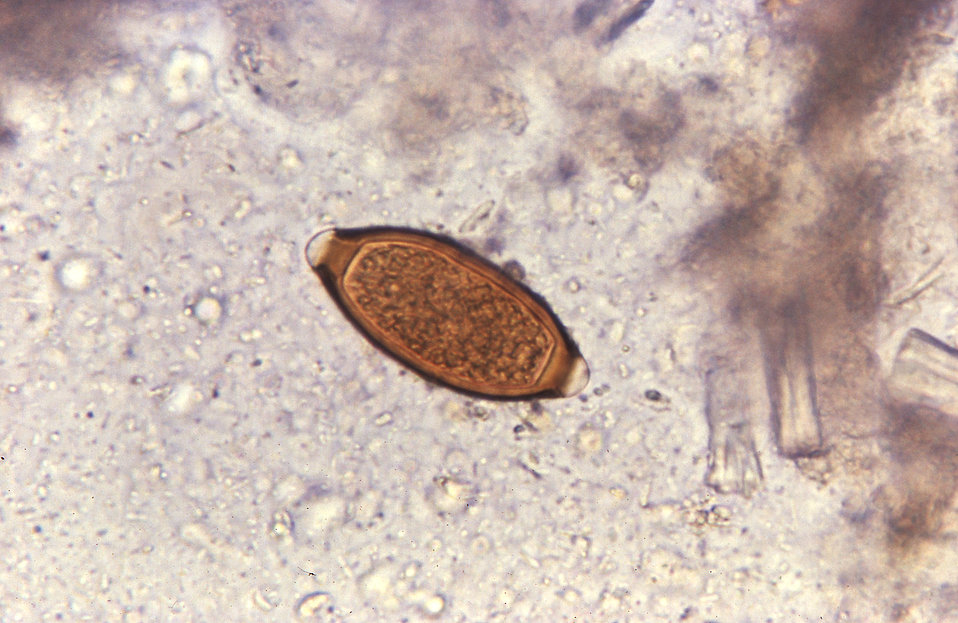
This photomicrograph reveals an egg from the nematode Trichuris trichiura; Mag. 400X.